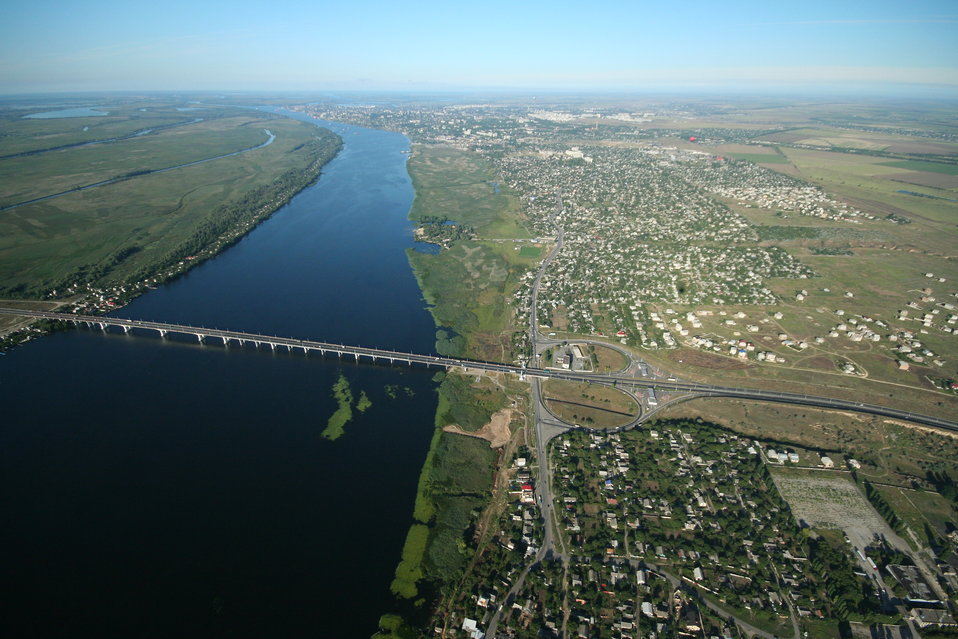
Русский: Вид на г. Херсон с воздушного шара, Антоновский мост через р. Днепр. Українська: Вид на м. Херсон з повітряної кулі, Антоновський міст через р. Дніпро.